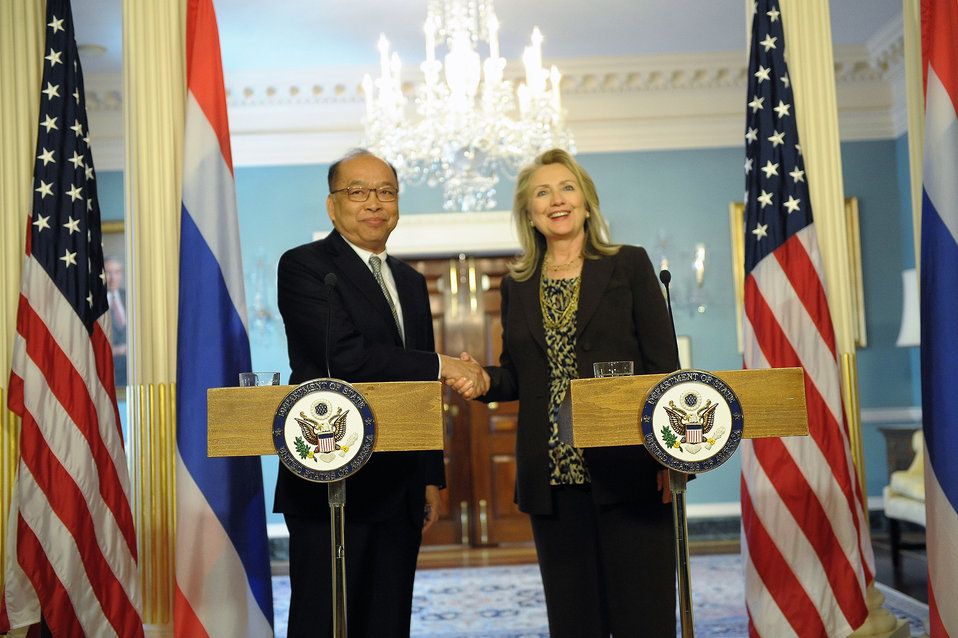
Secretary Clinton Delivers Remarks With Thai Foreign Minister Tovichakchaikul

U.S. Secretary of State Hillary Rodham Clinton delivers remarks with Thai Foreign Minister Dr. Surapong Tovichakchaikul at the Department of State in Washington, D.C. on June 13, 2012.